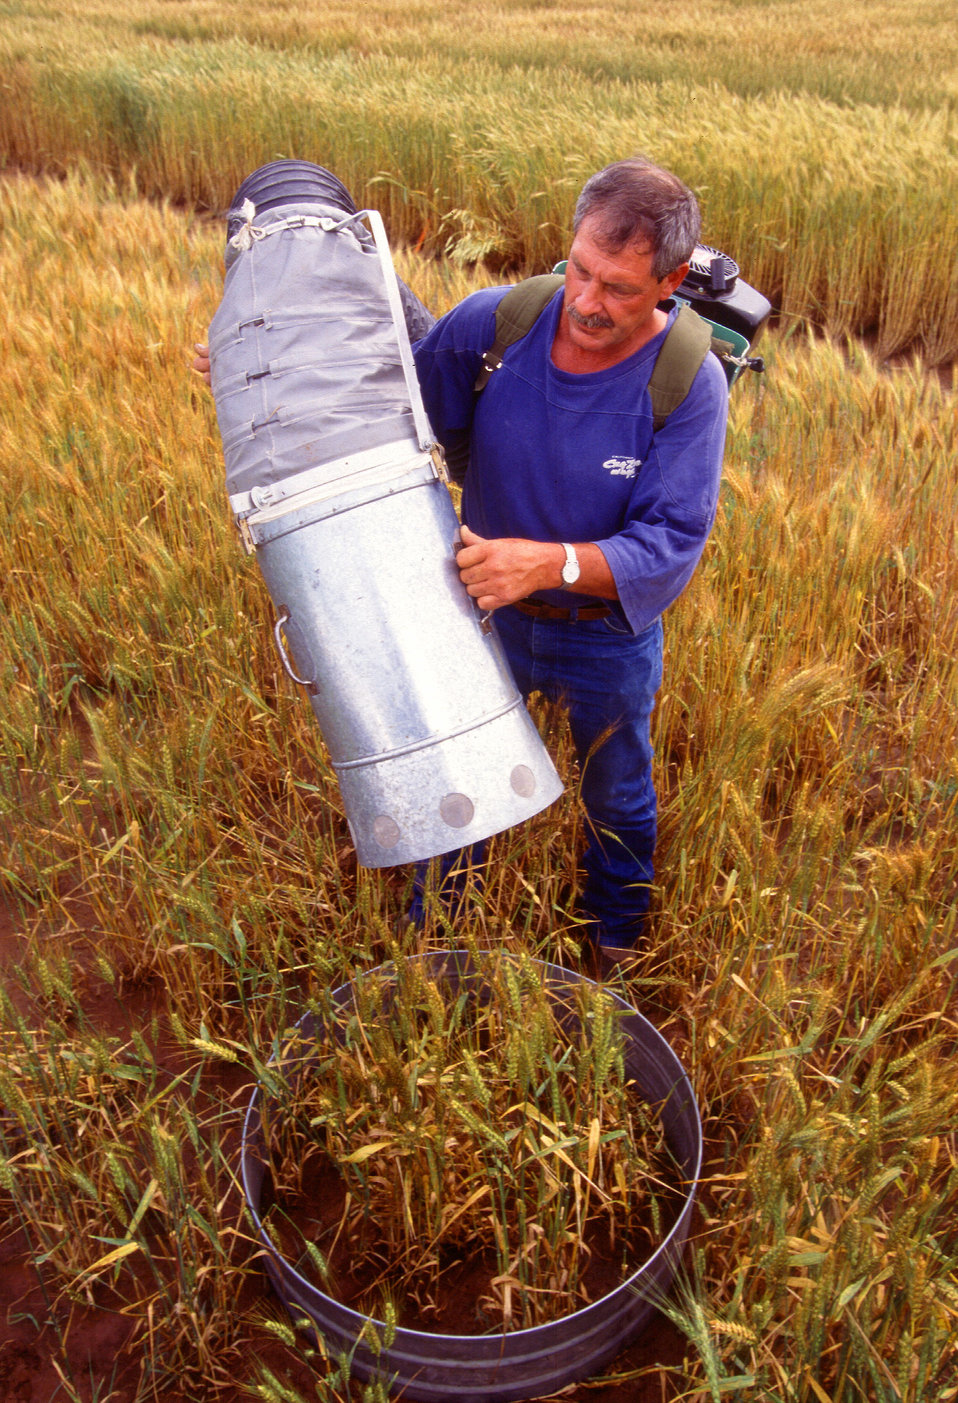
U.S. Department of Agriculture (USDA) Agricultural Research Service (ARS) technician Brian Jones uses a gasoline-powered insect vacuum to sample the number of spiders at various points in an Oklahoma wheat field. The tubular extension prevents crushing of wheat stems and enables the airflow to be maintained for efficient sampling.